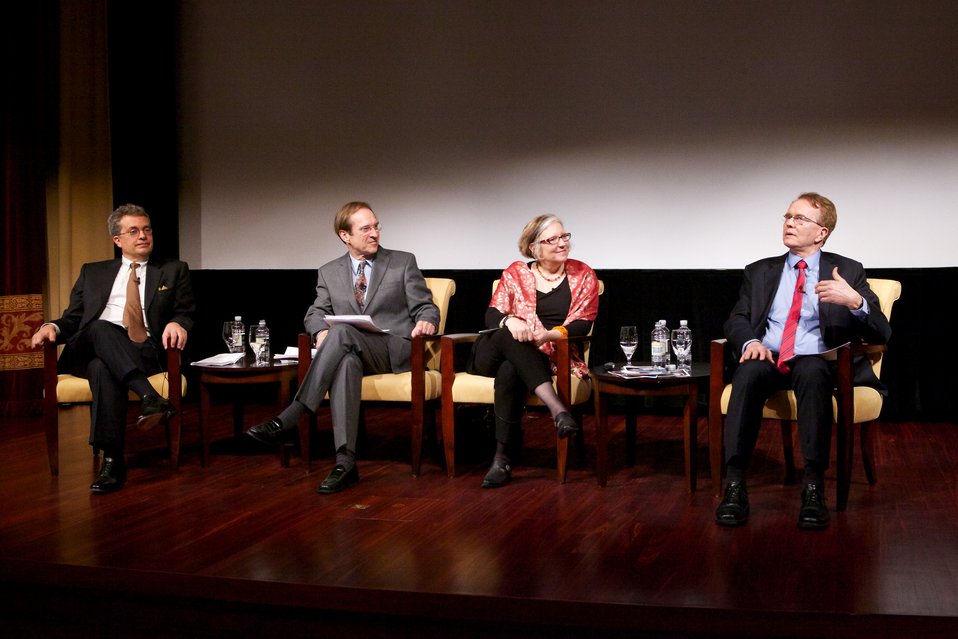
Jazz Diplomacy: Sending America's Music to the World